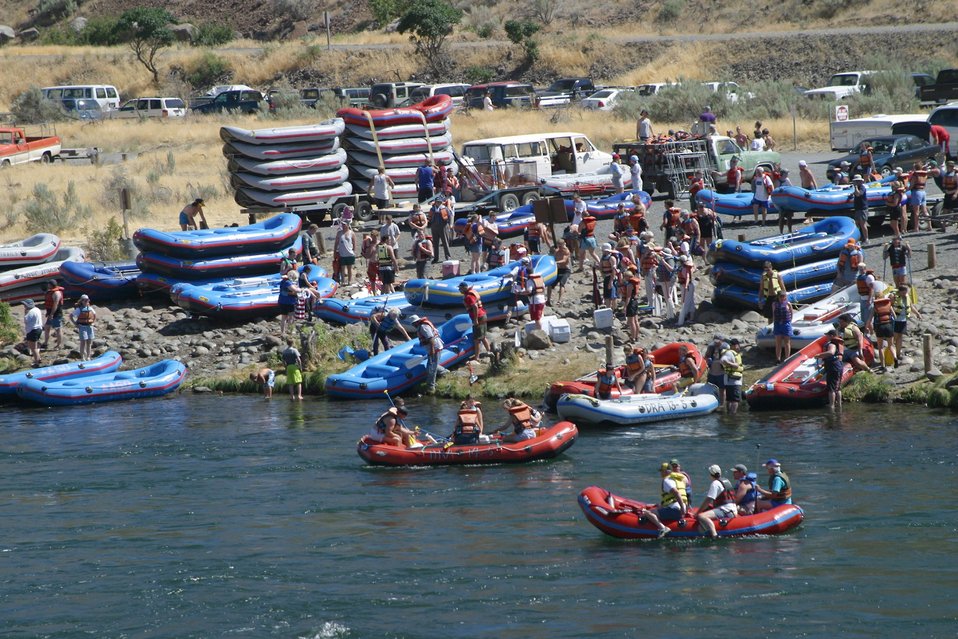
Over 200,000 people a year float the Lower Deshutes River.